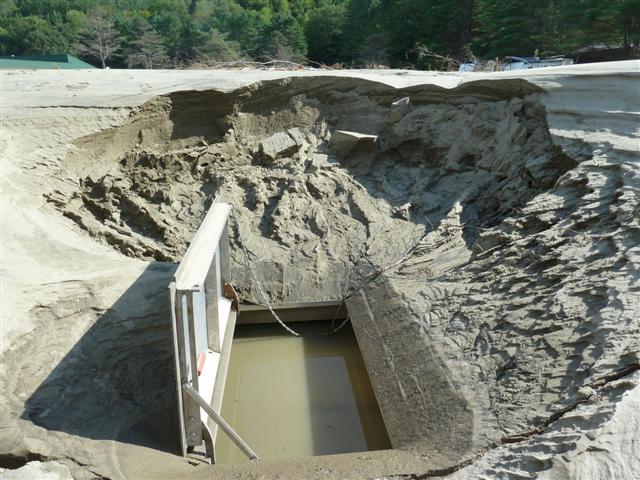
Damage at White River NFH - Bethel, VT

Damage to the valve box.

Credit: usfws